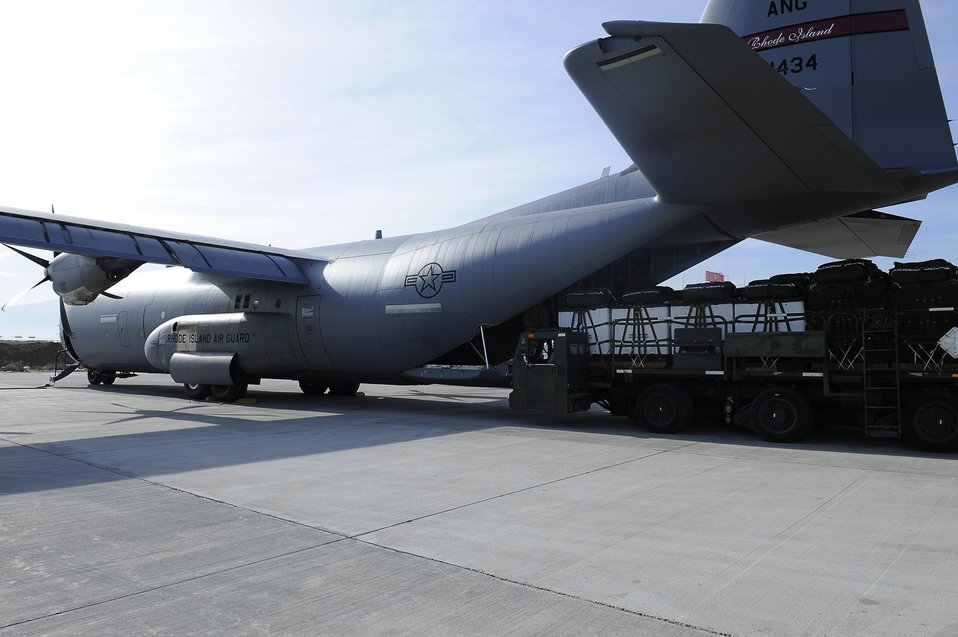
C-130J delivers supplies over Afghanistan

A C-130J Super Hercules is loaded for an airdrop mission at Bagram Airfield, Afghanistan, March 2, 2010.